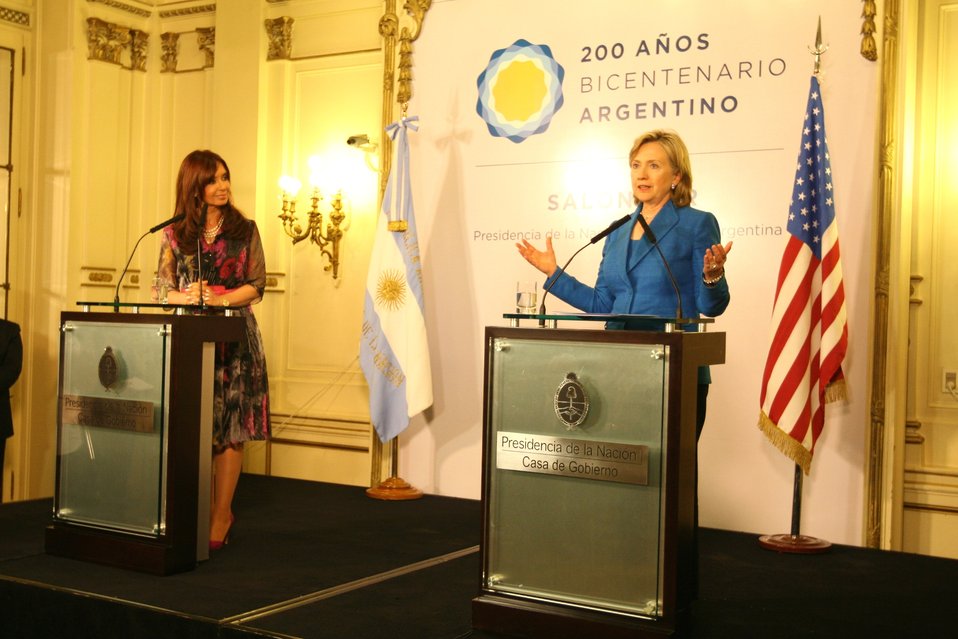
Secretary Clinton With Argentine President Cristina Fernandez de Kirchner

U.S. Secretary of State Hillary Rodham Clinton speaks at a press conference with Argentine President Cristina Fernandez de Kirchner in Buenos Aires, Argentina March 1, 2010.